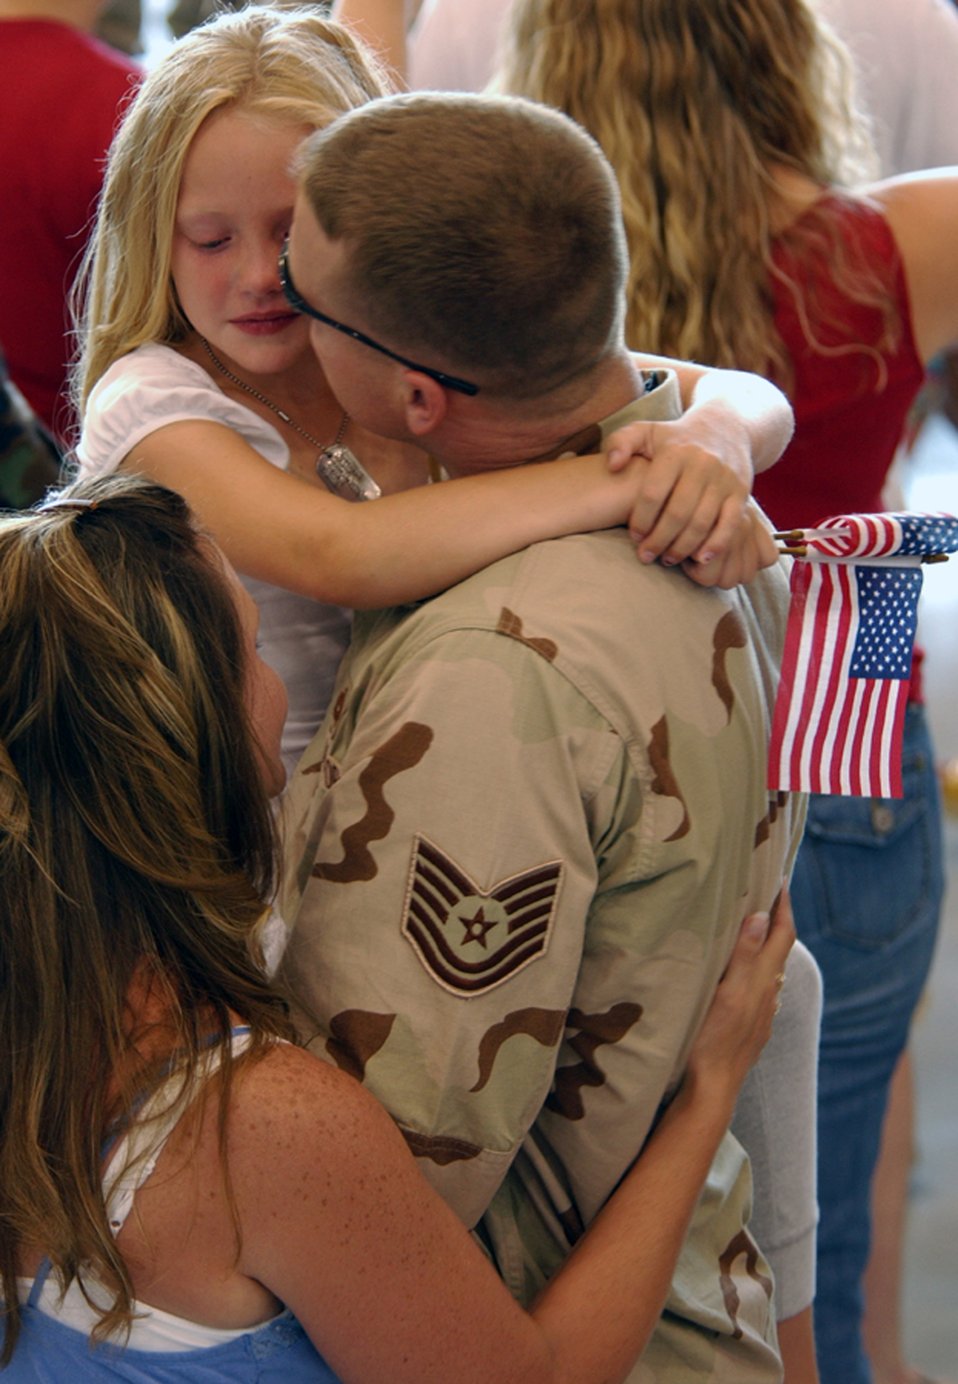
Happy holiday homecoming

Tech. Sgt. Alan Finck comforts his daughter after returning from his deployment July 4 to Hurlburt Field, Fla. He was one of the more than 200 Airmen who returned from deployments in support of Operations Iraqi and Enduring Freedom on Independence Day. Sergeant Finck is assigned to the 1st Special Operations Equipment Maintenance Squadron.